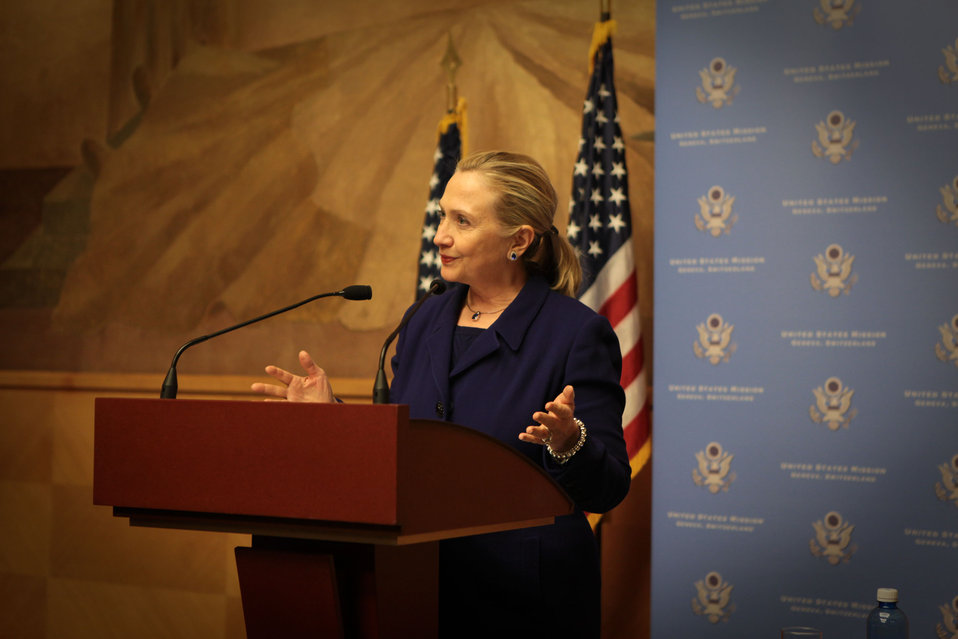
Secretary Clinton Speaks With LGBT Activists and Supporters

U.S. Secretary of State Hillary Rodham Clinton speaks with LGBT activists and supporters from the diplomatic corps at the United Nations Office at Geneva in Switzerland on December 6, 2011.